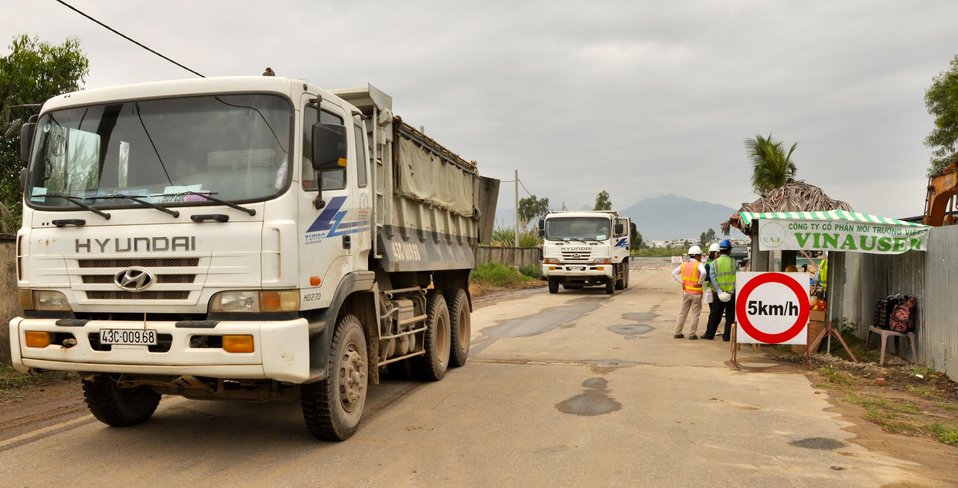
Danang AirpSite Preparation for Environmental Remediation of Dioxin Contamination at Danang Airportort Remediation Site Visit

Danang Airport, January 22, 2013